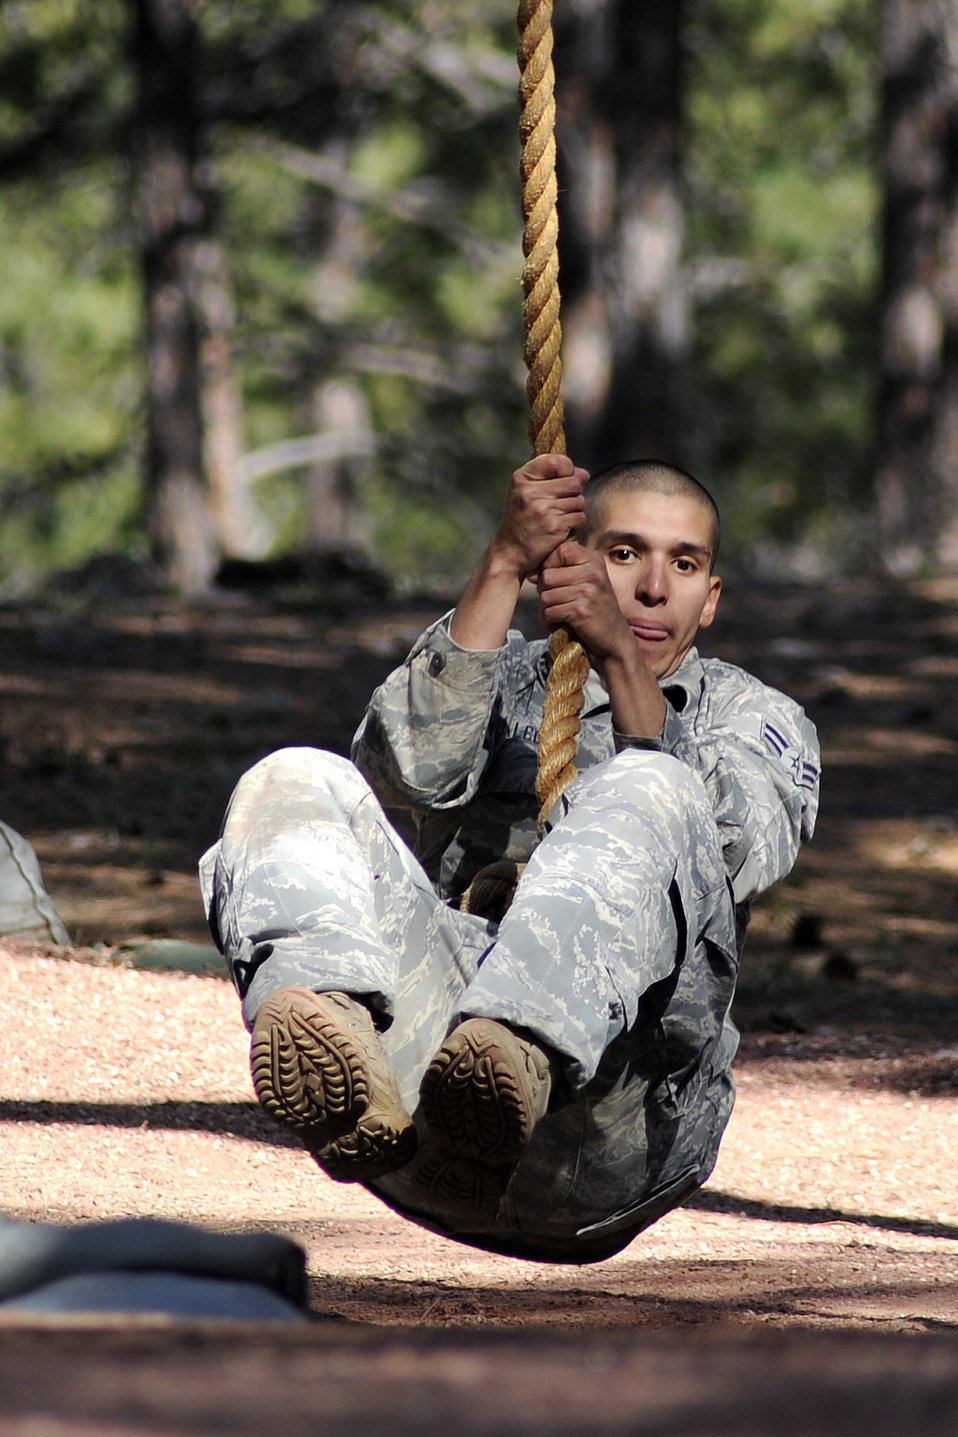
Security Forces Guardian Challenge

Airman 1st Class Warren Malcolm III makes it over the water obstacle at the U.S. Air Force Academy's obstacle course May 18, 2010, in Colorado Springs, Colo. He is a 50th Security Forces Squadron Guardian Challenge team member.